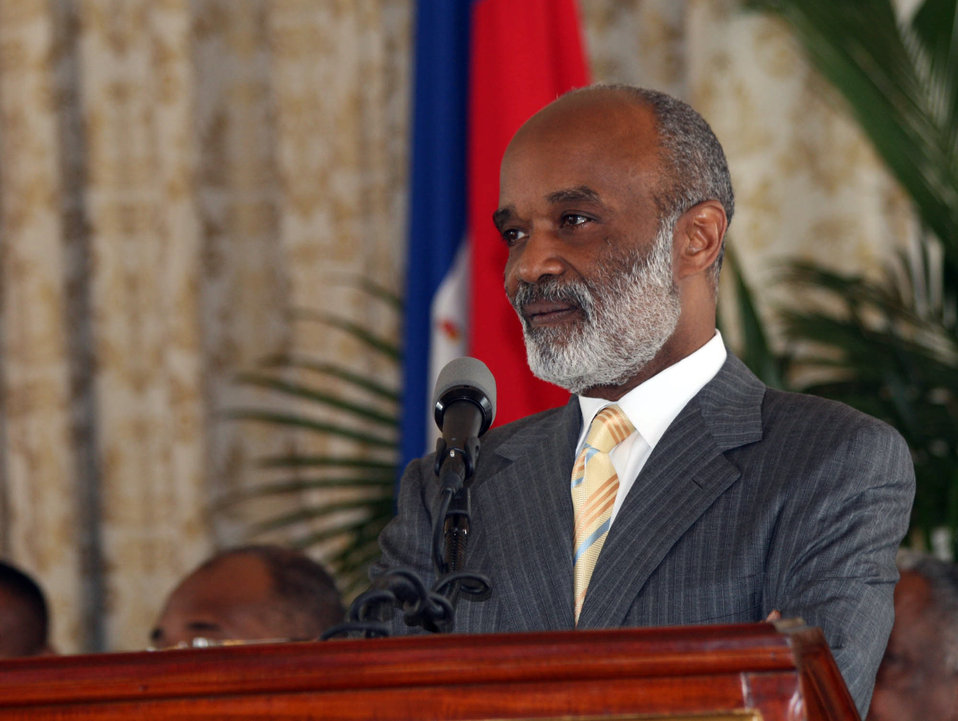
President Preval of Haiti During Press Conference

President of the Republic of Haiti, Rene Preval answers questions during a press conference at the National Palace, following a private meeting with U.S. Secretary of State Hillary Rodham Clinton in Port-au-Prince, Haiti April 16, 2009.